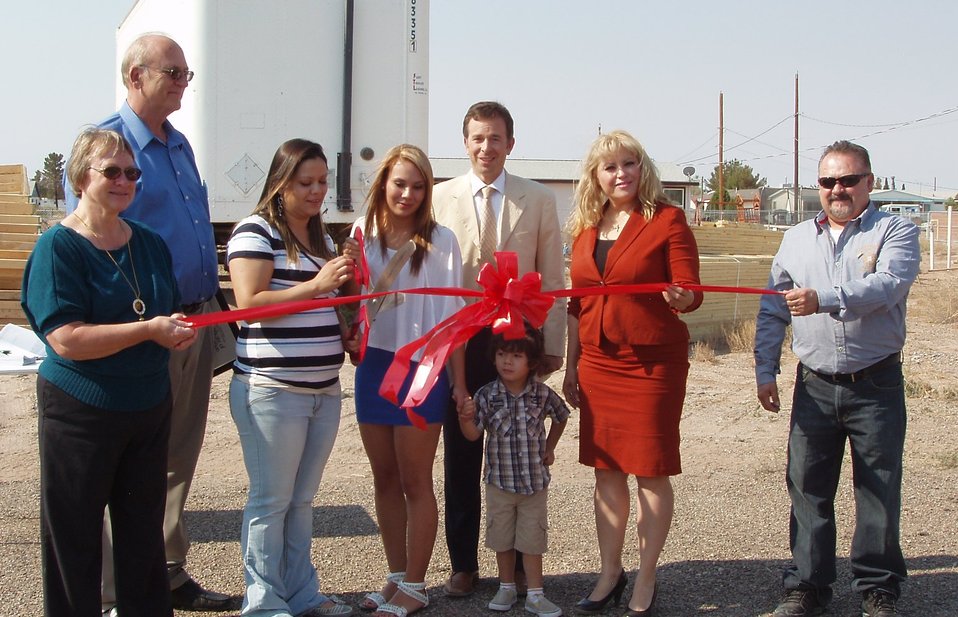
Deming Homeownership Month-01

A National Homeownership Month celebration was held in Deming, NM. Two new homeowners were honored during a ribbon cutting celebration at the construction site of the U.S. Department of Agriculture’s (USDA)-financed home of Yvonne Marquez. Participating in the event (l-r) are Southwestern Regional Housing and Community Development Corporation (SRHCDC) Susie Eaton, (SWRHCD) Executive Director Jerry Welch, homeowner Yvonne Marquez; homeowner Mariana Wheeler and her son Gilbert Ra, U.S. Department of Agriculture (USDA) Rural Development (RD) New Mexico State Director Terry Brunner, SWRHCD Deputy Director Veronika Molina, and contractor Isaias Amaya.